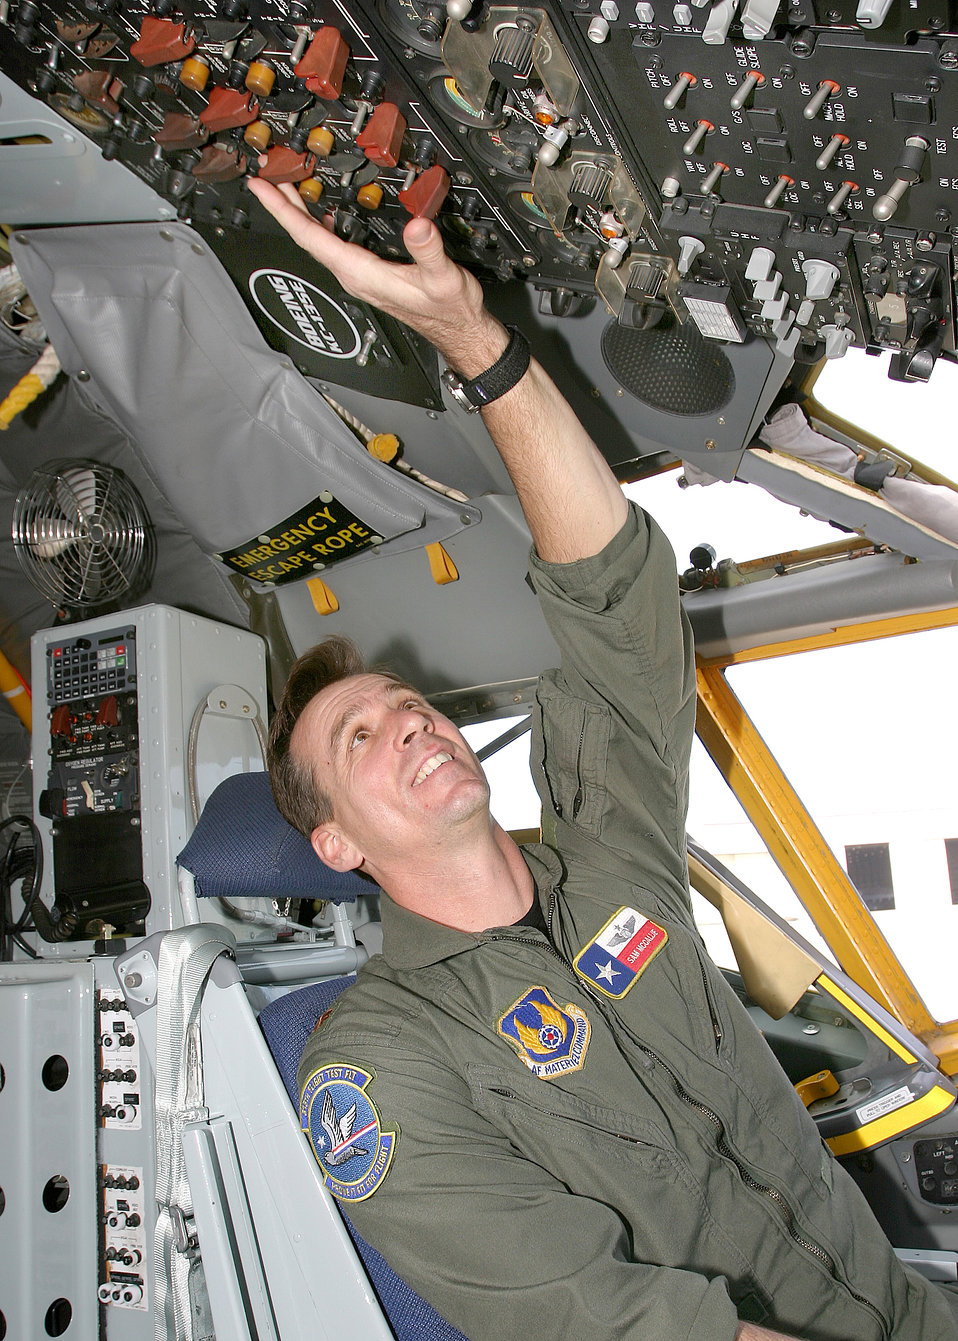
Small unit takes on big test

LACKLAND AIR FORCE BASE, Texas -- Maj. Sam McCallie checks the switches on a control panel in the cockpit of a KC-135 Stratotanker parked on the Kelly Field ramp at the Boeing Aerospace Support Center here. Major McCallie is chief of standardization and evaluation for the 313th Flight Test Flight.